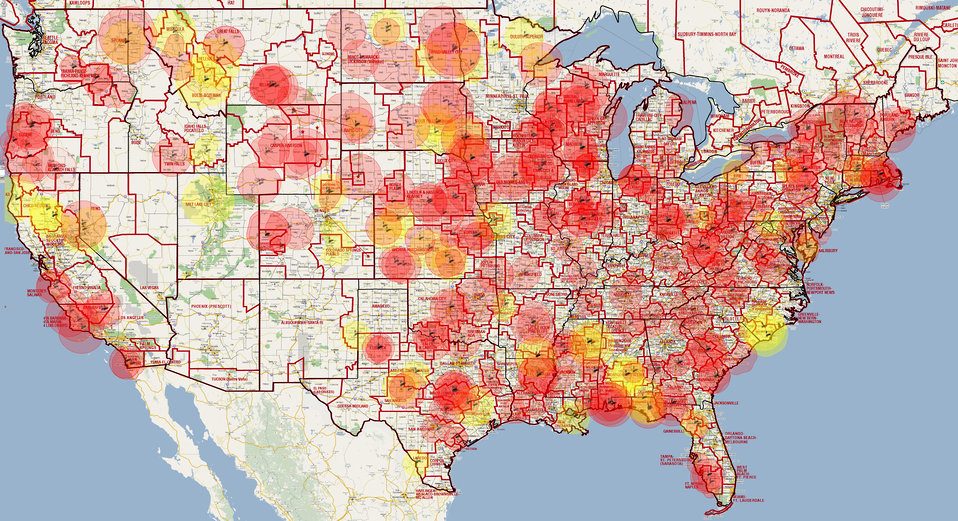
whole us dma red